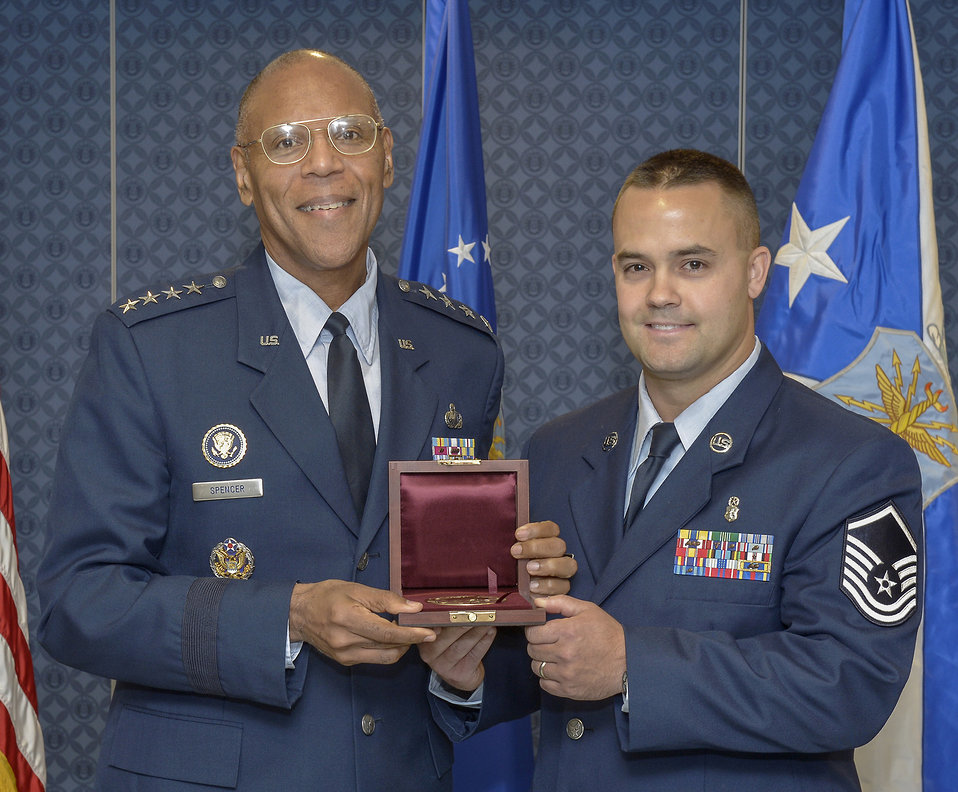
Cheney Award 2011

Air Force Vice Chief of Staff Gen. Larry Spencer presents the 2011 Cheney Award to Master Sgt. Joseph Brownell during a ceremony at the Pentagon on Nov. 1, 2012. Brownell earned the award for a harrowing rescue mission to extract a medically distressed civilian hiker and his son from the Cascade Mountains of Washington state.